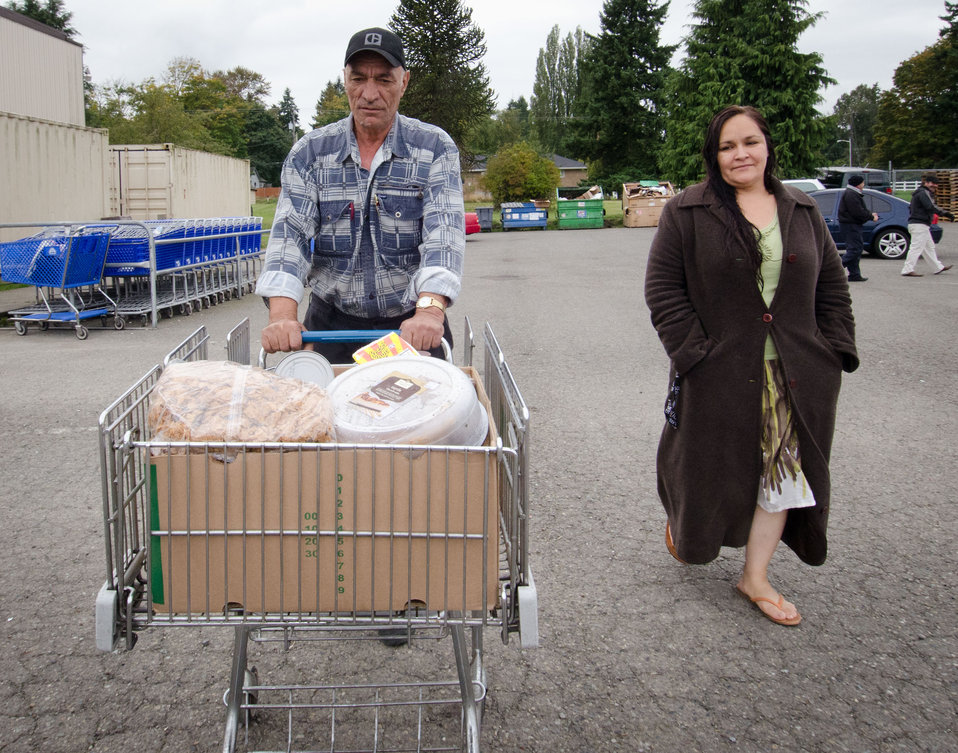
Mekhredze Telman (left) pushes Amanda Arthur's (right) cart of dry and canned goods at Tukwila Pantry, Tukwila. WA, on Thursday, October 20, 2011. The pantry provides monthly food bank services to individuals and families in cities of Tukwila, SeaTac, Burien and the Boulevard Park community. Congregate meal service is held each Tuesday at their location in the Riverton Park United Methodist Church. The church provides some funds, several large rooms, and outdoor operating space for the pantry’s food distribution, shipping container storage units, trailer, tents, shelters and refrigeration truck. The pantry's weekly Tuesday’s Table provides 150 hot meals to seniors, low-income families, homeless individuals and those in transition. Additionally, emergency referral services are provided to assist individuals connecting with agencies that can address their needs. Executive Director Joe Tice grew up in Tukwila and feels compelled to give back to economically challenged community of 25,000 families in 3,000 households. “Since the pantry’s founding in 2000, census figures show poverty has risen 300%,” said Joe Tice. “85-95% of elementary school children are enrolled in SNAP (U.S. Department of Agriculture Supplemental Nutrition Assistance Program).” At the pantry’s height, it delivered 3.8 million pounds of food (2009), but with the economic downturn Tice projects 2011 deliveries to total 2.6 million pounds. Tice, considers Tukwila Pantry as one of the smaller distribution points in the greater Seattle area. Some canned and dry goods are provided by
The Emergency Food Assistance Program (TEFAP) a Federal program that helps supplement the diets of low-income needy persons, including elderly people, by providing them with emergency food and nutrition assistance. A significant amount of the pantry’s food comes through Northwest Harvest, Washington's only nonprofit statewide food bank distributor; and Food Lifeline, the largest nonprofit food distributor in the state who solicit, receive, and distribute over 24 million meals of food to nearly 700,000 people through our network of 300 food banks (such as Tukwila Pantry), shelters and meal programs.